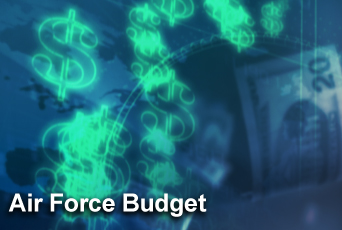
Air Force FY 2008 budget includes pay raise, new facilities

The Air Force budget is divided into three primary areas: people; readiness; and modernization and recapitalization. Air Force leaders list taking care of Airmen as one of their top three priorities, and this year, nearly a third of the budget, about $36 billion dollars, goes toward that goal.